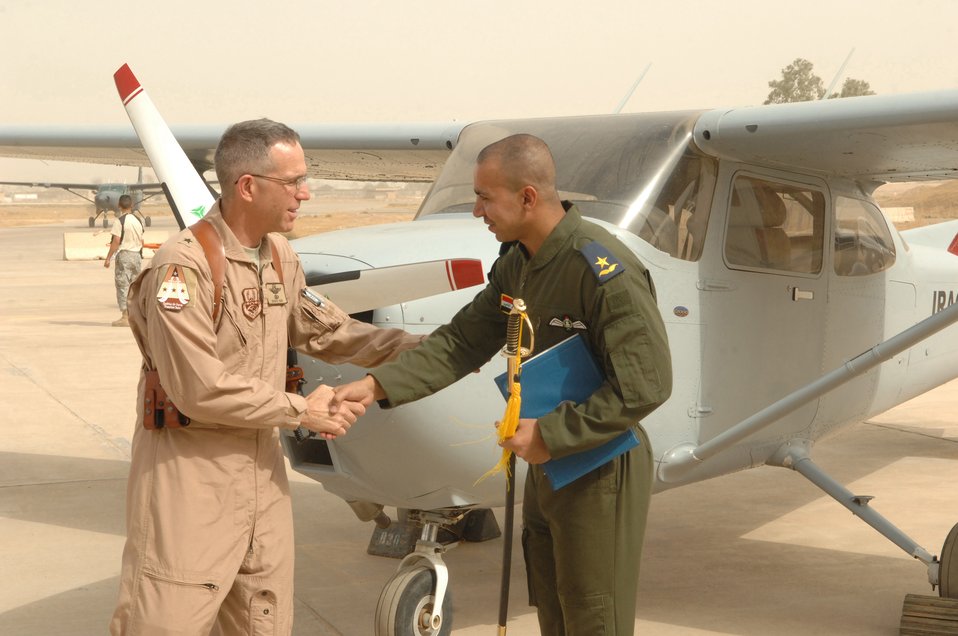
Iraqi air force pilots take flight into history

Brig. Gen. Brooks Bash gives a congratulatory handshake to Iraqi air force 2nd Lt. Hassan at Kirkuk Regional Air Base, Iraq, Oct.13. Lieutenant Hassan and two other Iraqi airmen were the first class to graduate from Iraq?s only fixed-wing flight training school. General Bash is the Coalition Air Force Transition Team commander.